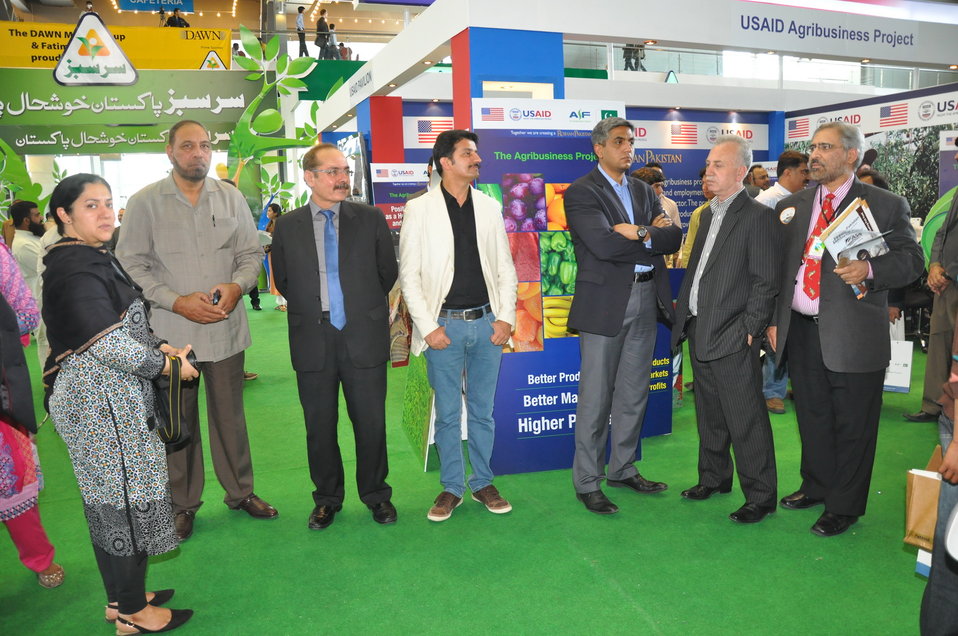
FEEDing Pakistan (ASA/WISHH/USDA)

Dedicated Staff USAID, USDA, Commercial Section CG Lahore and ASA/WISHH